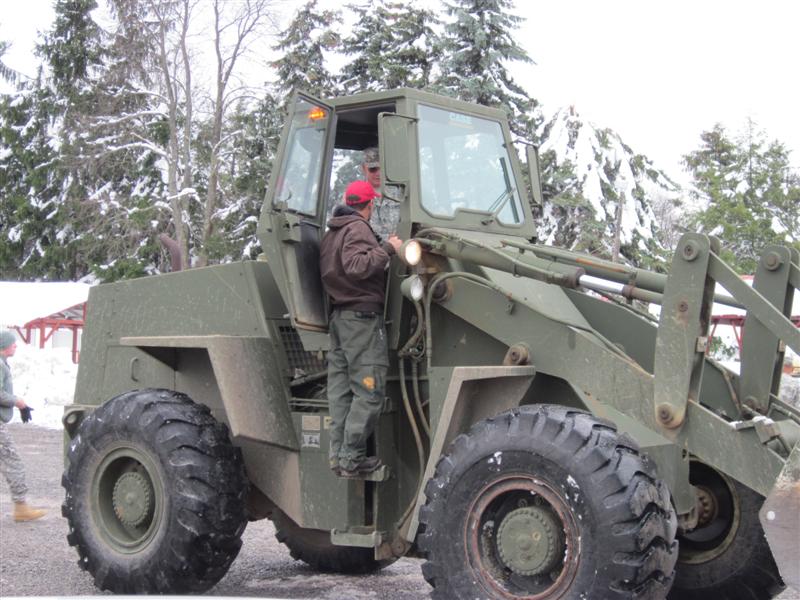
Service responds to Sandy in West Virginia

Greg Titus, a division fire management officer from St. Marks National Wildlife Refuge in Florida, coordinates with the West Virginia National Guard.